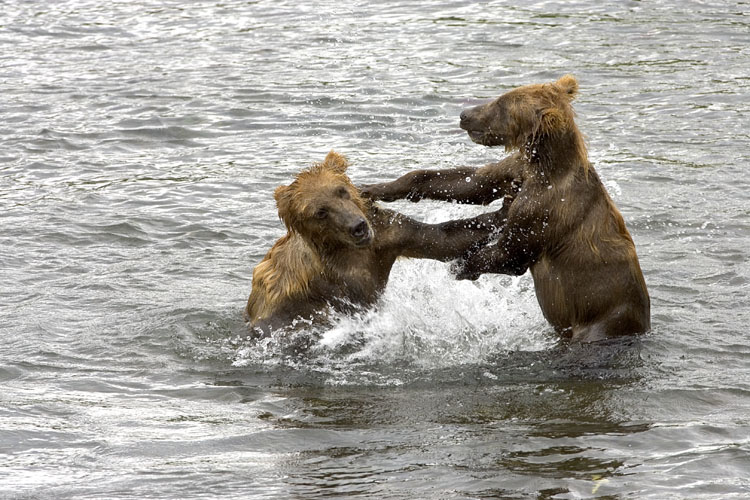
KOD Hildebrand (34)

Kodiak National Wildlife Refuge- Wildlife